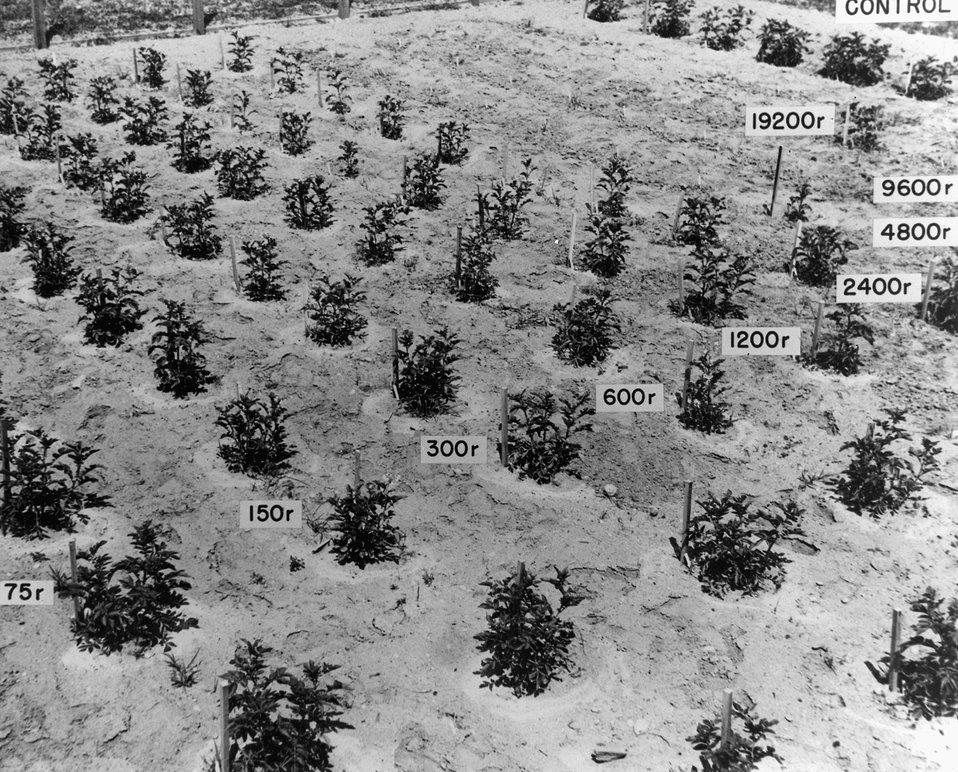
Inserted by each row of potatoes is the number of roentgens of X-ray radiation the tubers in this row received before planting. c. 1952